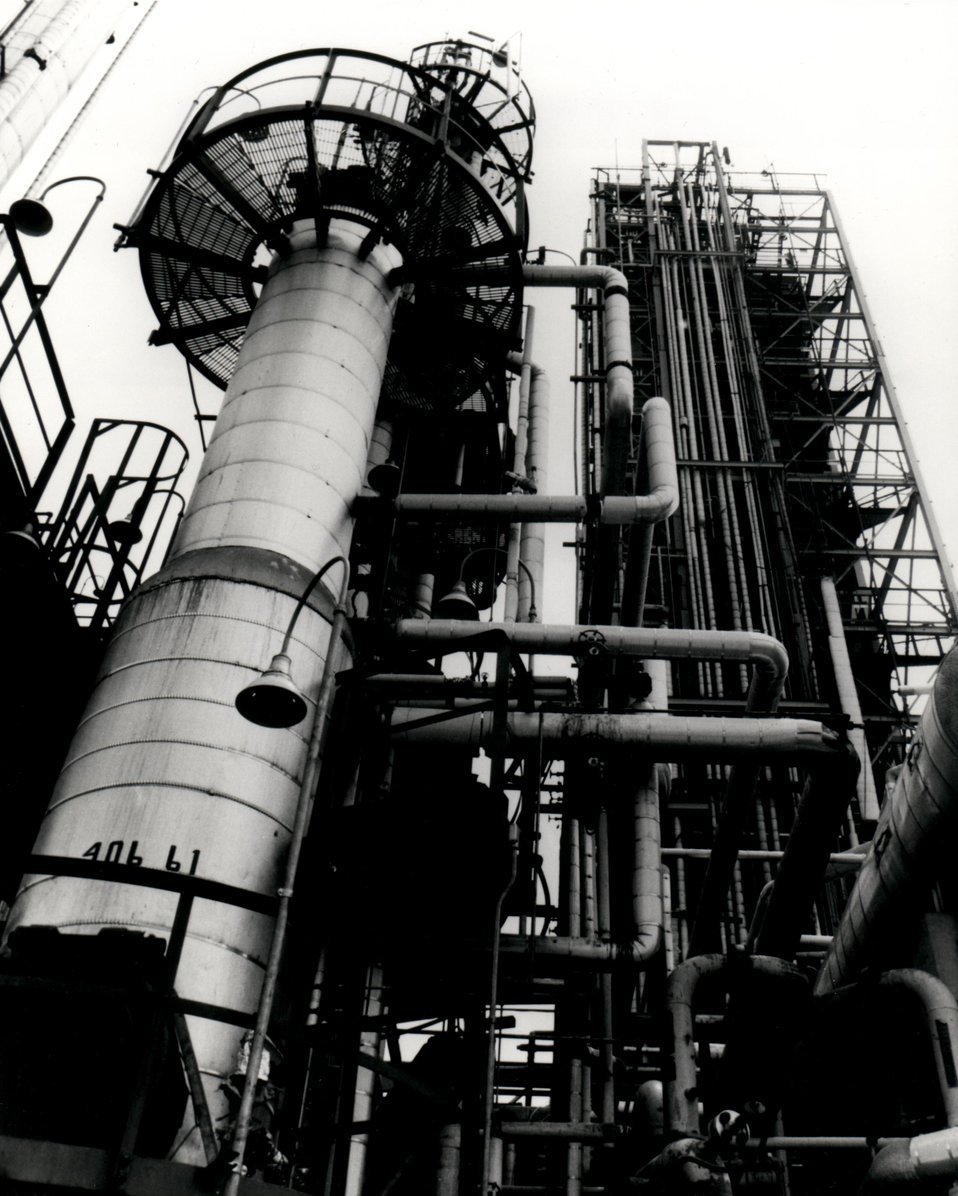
A view of the Energy Research and Development Administration's (HYGAS) Hugh-Btu Gasification pilot plant near Chicago, Illinois.